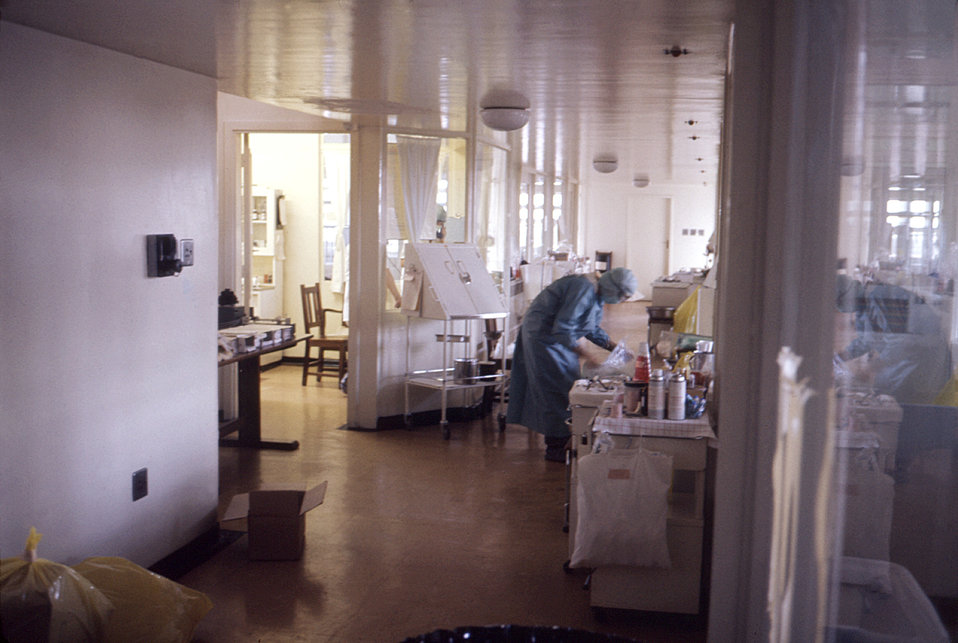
This photograph shows a nurse in an isolation ward during the 1975 Marburg outbreak in Johannesburg, South Africa.